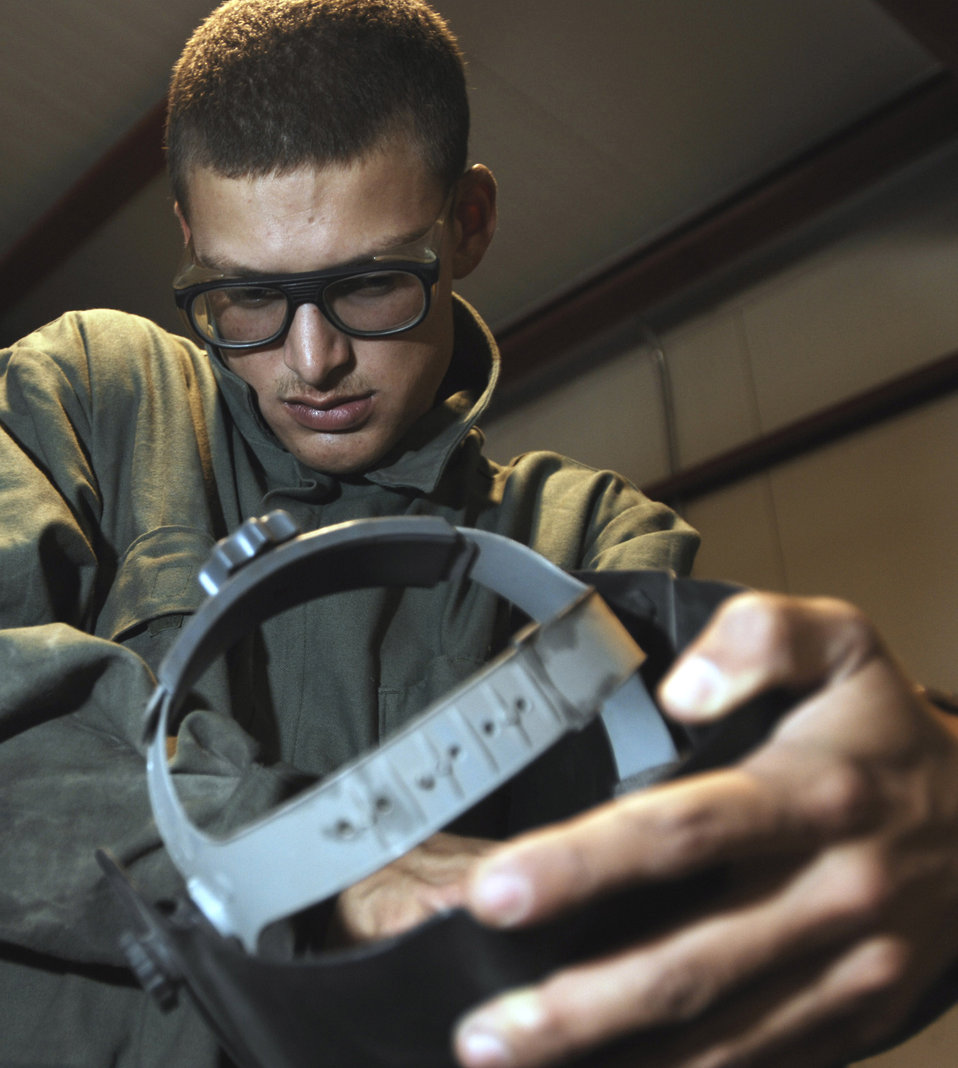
Showing his metal

Senior Airman Joseph Krafchak turns on a welding helmet before repairing an aircraft maintenance stand Aug. 2 at Joint Base Balad, Iraq. The helmet protects the user's eyes automatically in response to the bright light emitted from welding. Airman Krafshak, a metals technician journeyman with the 332nd Expeditionary Maintenance Squadron here, is deployed from Shaw Air Force Base, S.C. His hometown is Lompoc, Calif.